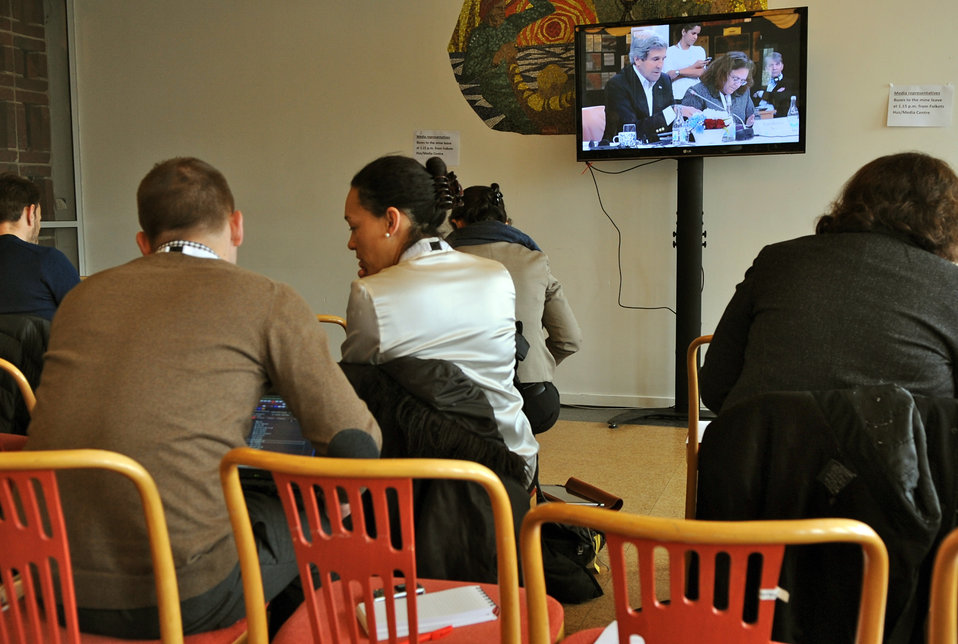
Secretary Kerry Addresses the Eighth Arctic Council Meeting

Reporters listen as U.S. Secretary of State John Kerry addresses the Kiruna Ministerial Meeting of the eighth annual Arctic Council meeting at the City Hall in Kiruna, Sweden, on May 15, 2013.